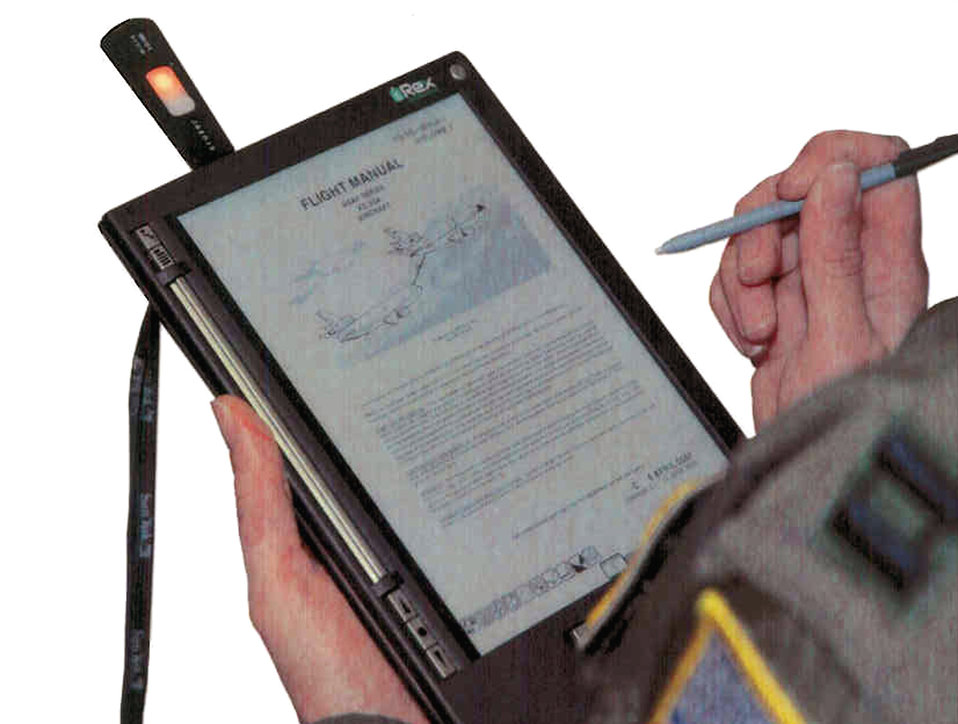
Air Mobility Battlelab initiative aims to give aircrews newer 'paperless' option

The iRex Iliad e-Reader, a